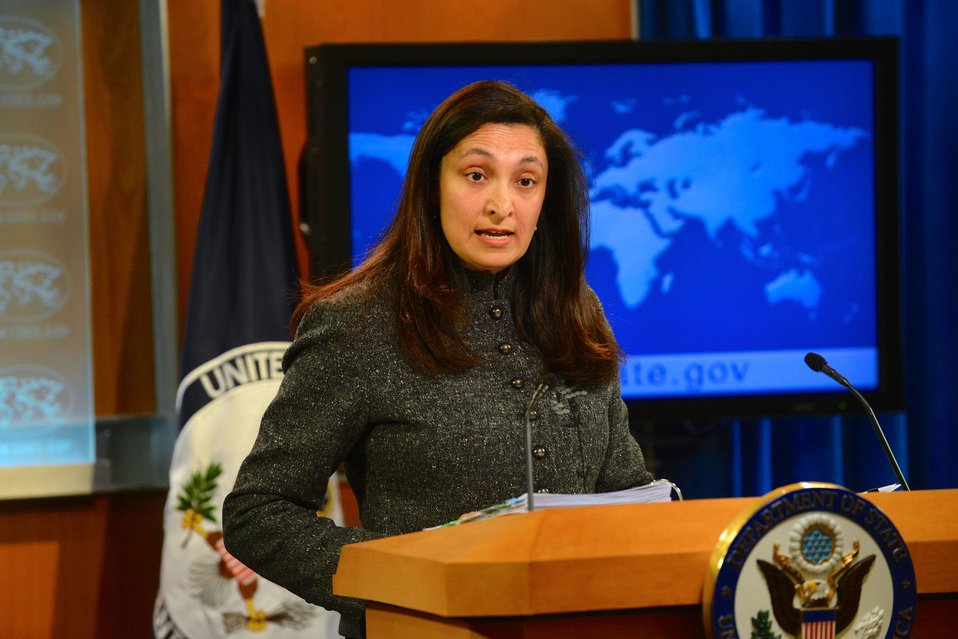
Acting Assistant Secretary Zeya Responds to Questions on the Annual Country Report on Human Rights

Acting Assistant Secretary for Democracy, Human Rights, and Labor Uzra Zeya participates in U.S. Secretary of State John Kerry’s rollout of the annual Human Rights Report at the U.S. Department of State in Washington, D.C., on February 27, 2014.